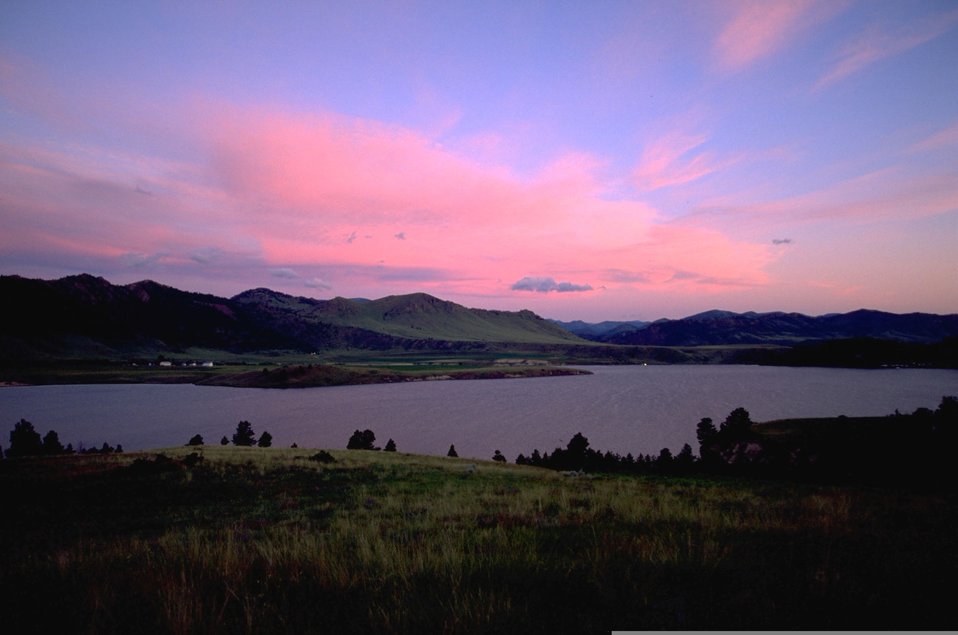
Holter Lake sunset